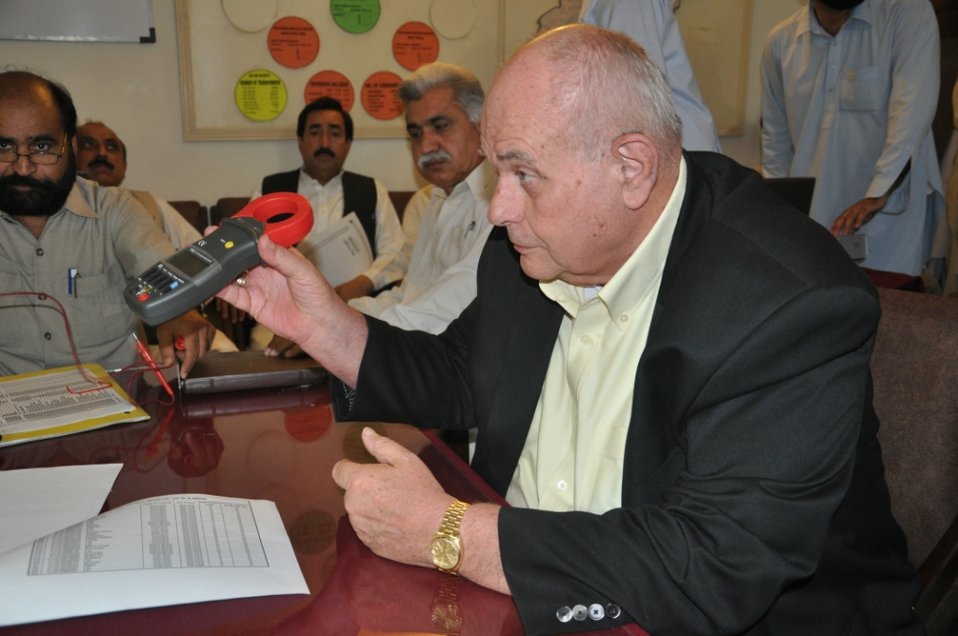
Usaid To Provide Technical Assistance To Improve Efficiency Of Tube-Wells In Iesco By Installing 2600 Lt Capacitors at Islamabad on April 26, 2012